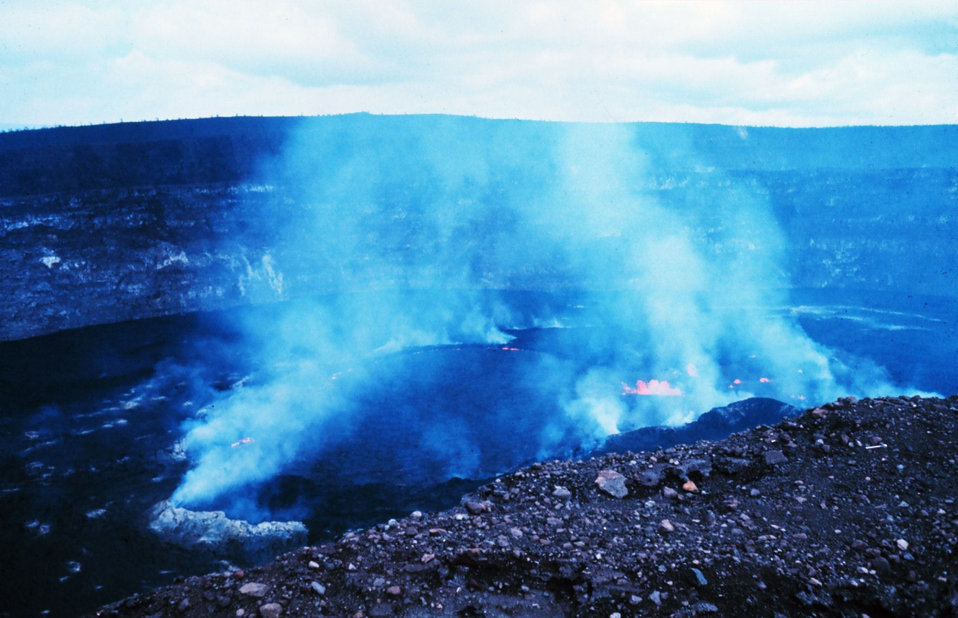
Halemaumau firepit during an active phase.